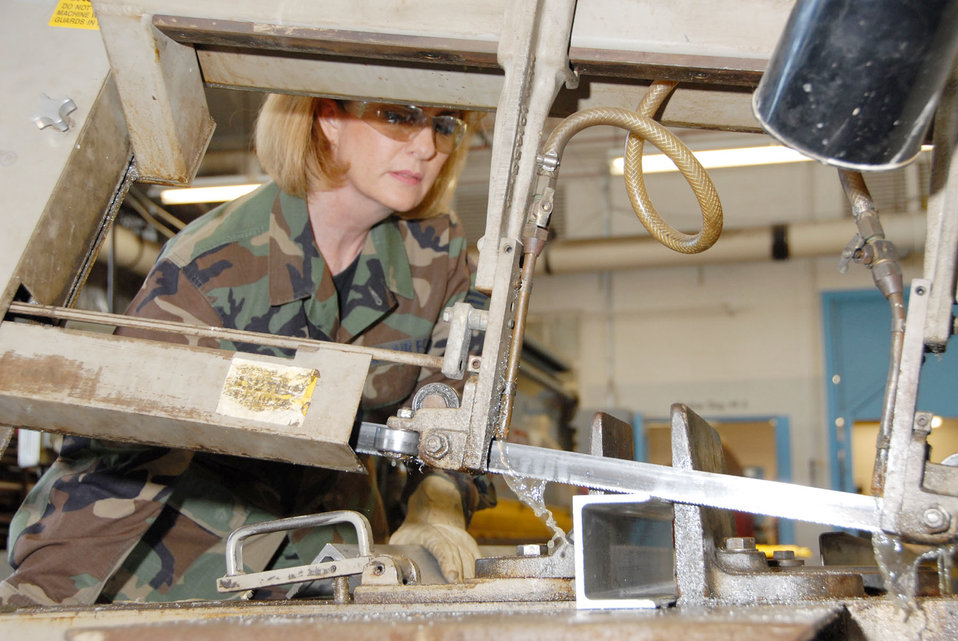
Museum restoration

Tech. Sgt. Sherri St. John, a reservist with the 315th Maintenance Squadron at Charleston Air Force Base, S.C., saws a piece of stock metal during her two-week stay at Wright-Patterson Air Force Base, Ohio, where she worked in the restoration hangar at the National Museum of the U.S. Air Force in nearby Dayton.